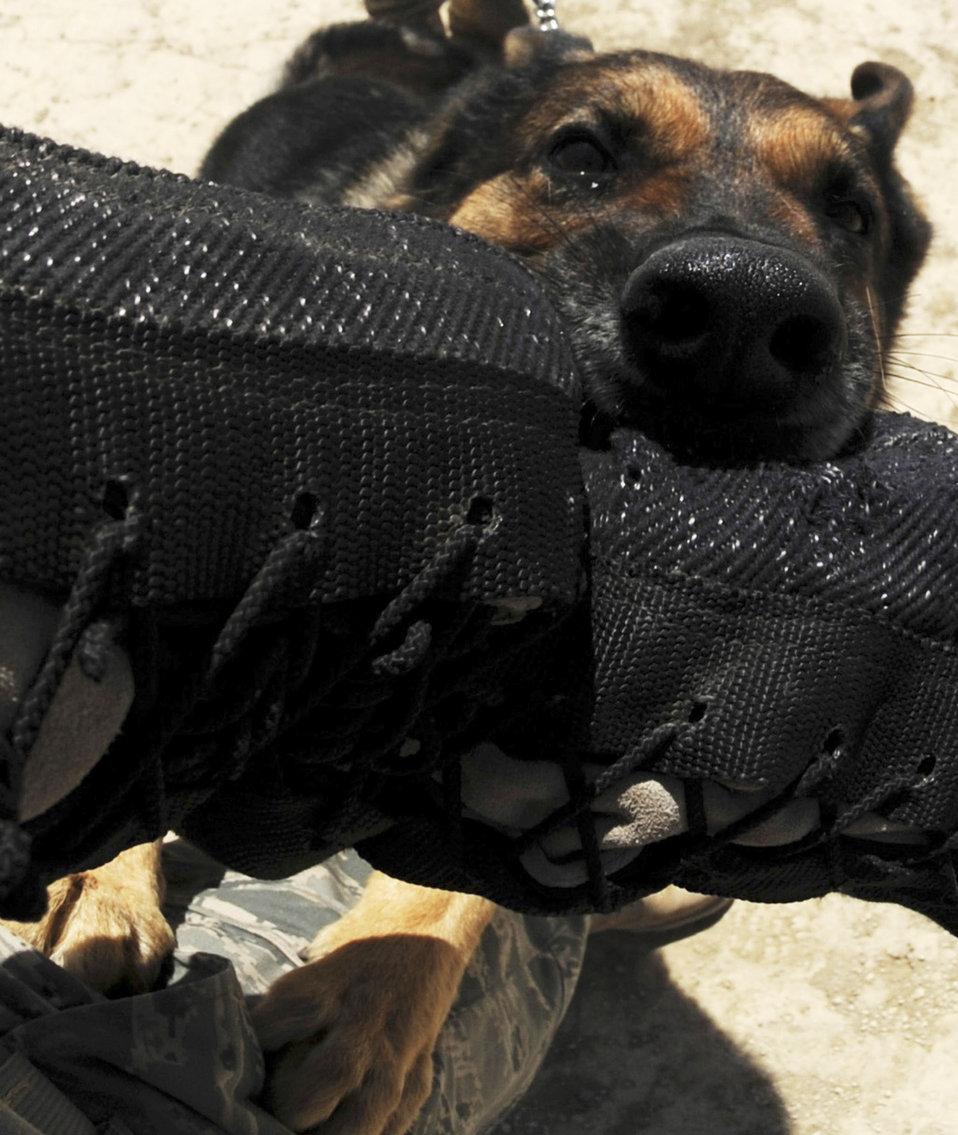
Dog days of summer

Baiky, a military working dog, gnaws on a training sleeve Aug. 7 at Bagram Airfield, Afghanistan. Baiky is deployed here with his handler, Staff Sgt. Chris Reynolds, from Vandenberg Air Force Base, Calif. He and his dog patrol the base and inspect mail, luggage and vehicles for narcotics.